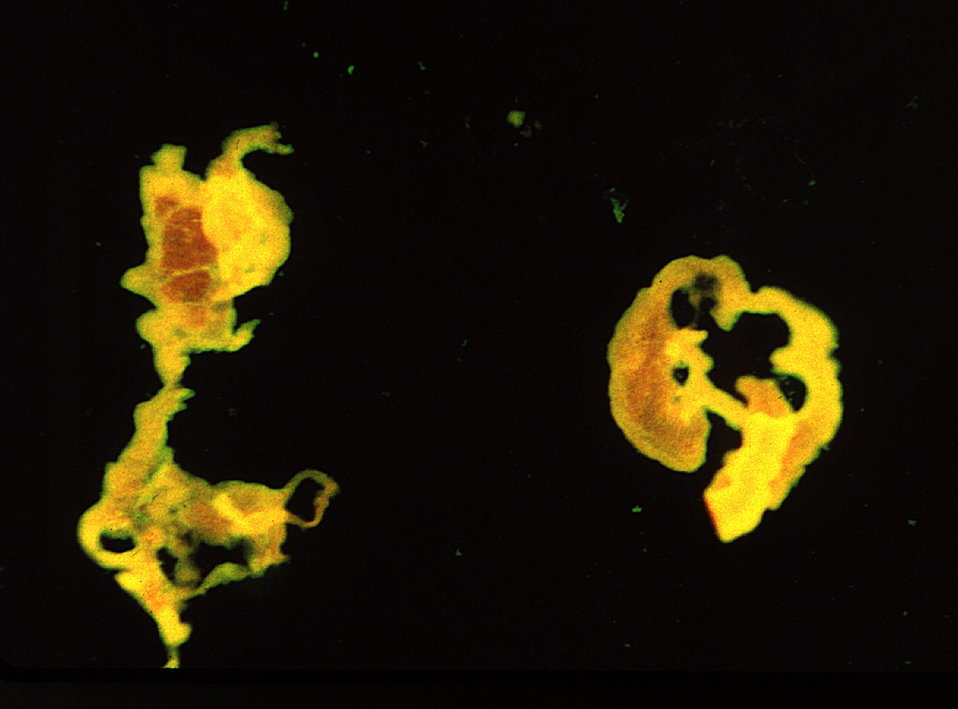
Under a low magnification of 78X, and stained using an indirect fluorescent antibody (IFA) test, this photomicrograph revealed some of the ultrastructural morphology exhibited by a number of Schistosoma mansoni trematodes.Laboratory Diagnosis for Schistosomiasis: